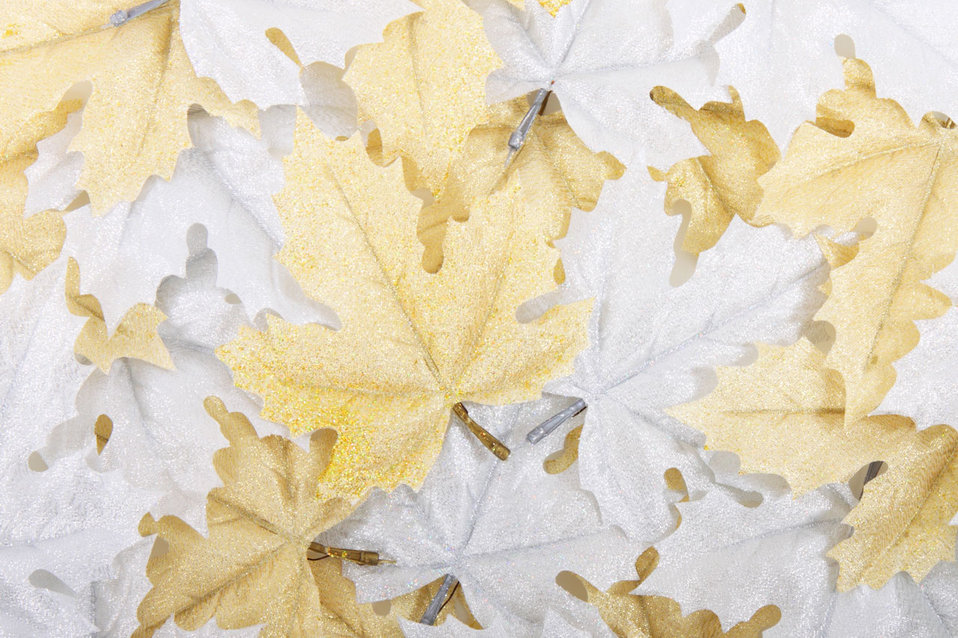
Leaves decoration background

Silver and golden leaves decoration background.